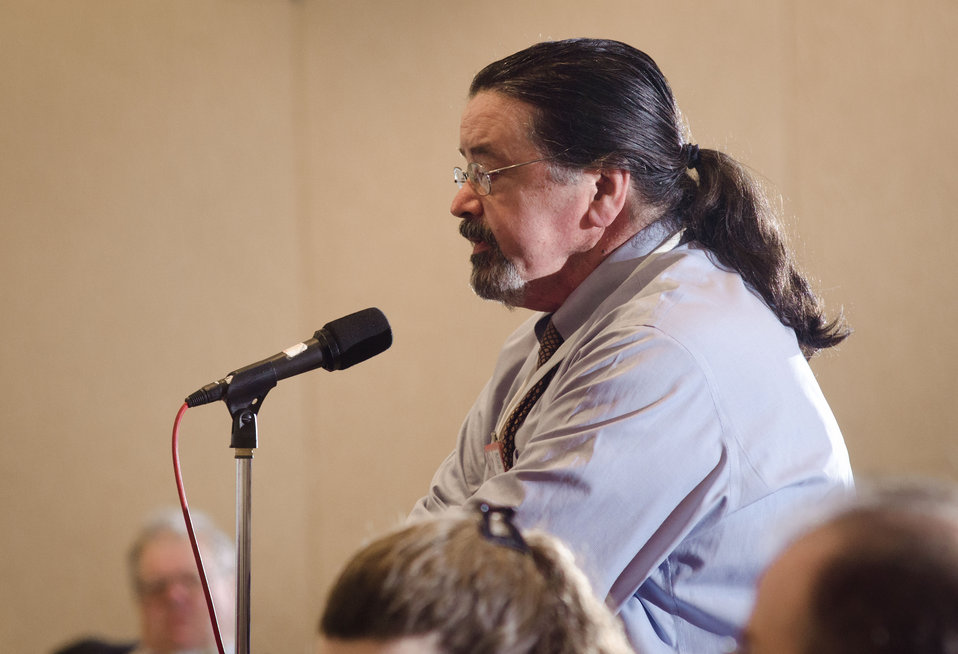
Attendees asked questions during every breakout session of the 2012 Agricultural Outlook Forum, “Moving Agriculture Forward, Growing, Innovating and Celebrating 150 Years” held at the Crystal Gateway Marriott Hotel, Arlington, Virginia, on Friday, February 24, 2012. This year’s forum coincides with the 150th anniversary of the Department of Agriculture addressing economics, marketing, research, food safety, nutrition, conservation, rural development, alternative energy, trade and many other agricultural issues.